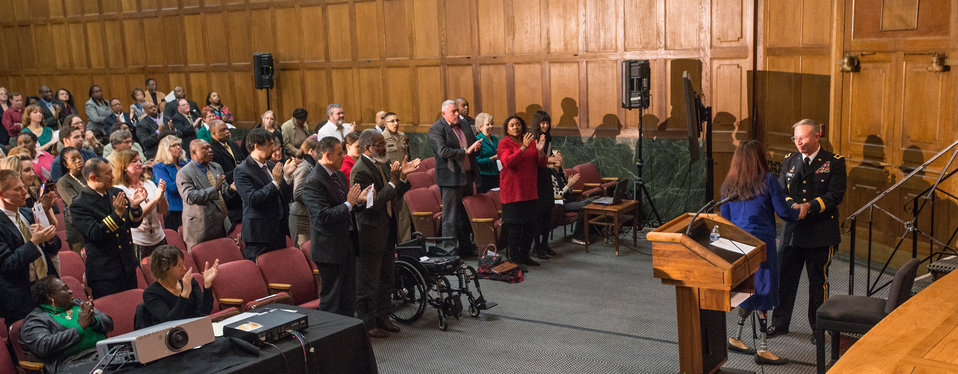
U.S. Congresswoman Tammy Duckworth (D.-Ill.) is the keynote speaker at the 2013 U.S. Department of Agriculture (USDA), Veterans’ Day Observance, whose theme is “VALOR, COURAGE, SACRIFICE – HONORING ALL WHO SERVED,” in Washington, DC, on Wednesday, November 20, 2013. Congresswoman Tammy Duckworth is an Iraq War Veteran and former Assistant Secretary of Veterans Affairs. In 2004, Duckworth was deployed to Iraq as a Blackhawk helicopter pilot for the Illinois Army National Guard. She was one of the first Army women to fly combat missions during Operation Iraqi Freedom until her Blackhawk helicopter was hit by an RPG on November 12, 2004. Duckworth lost her legs and partial use of her right arm in the explosion and was awarded a Purple Heart for her combat injuries. Duckworth declined a military medical retirement and continues to drill as a Lieutenant Colonel in the Illinois Army National Guard.